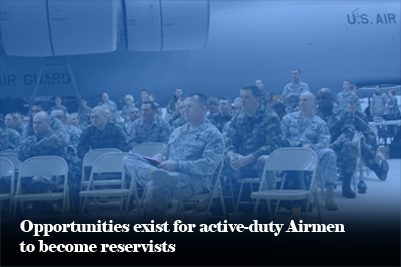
Opportunities exist for active-duty Airmen to become reservists